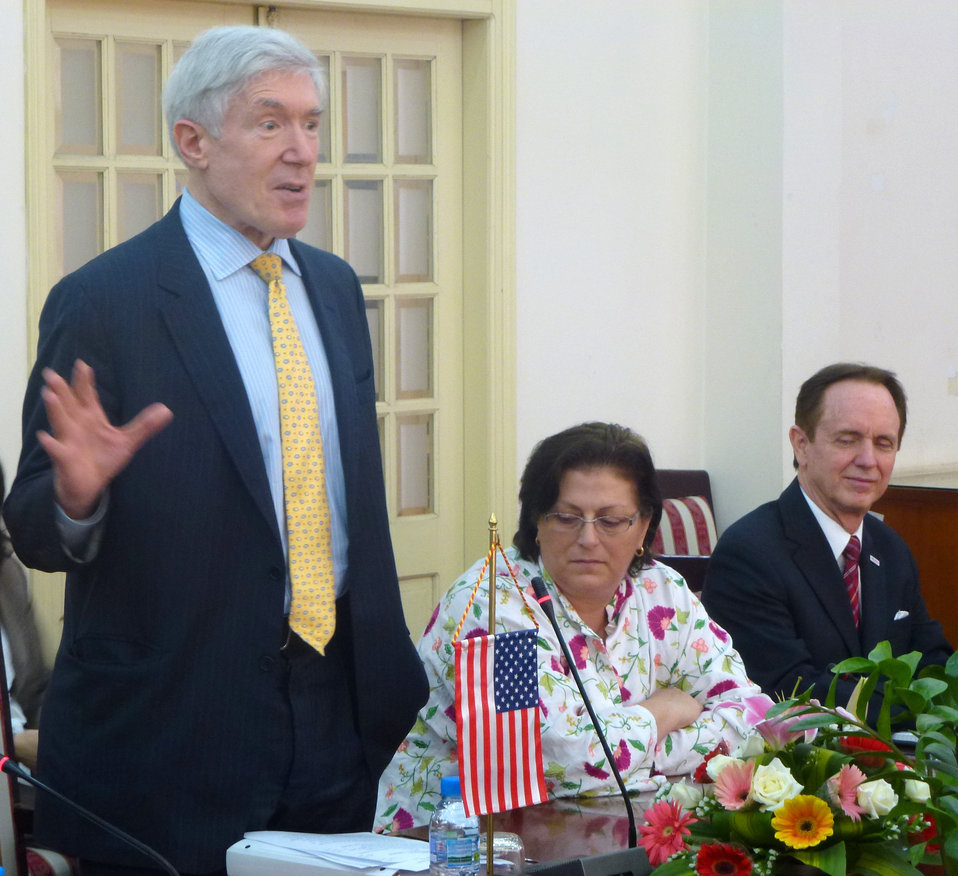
U.S. Under Secretary of State Robert Hormats